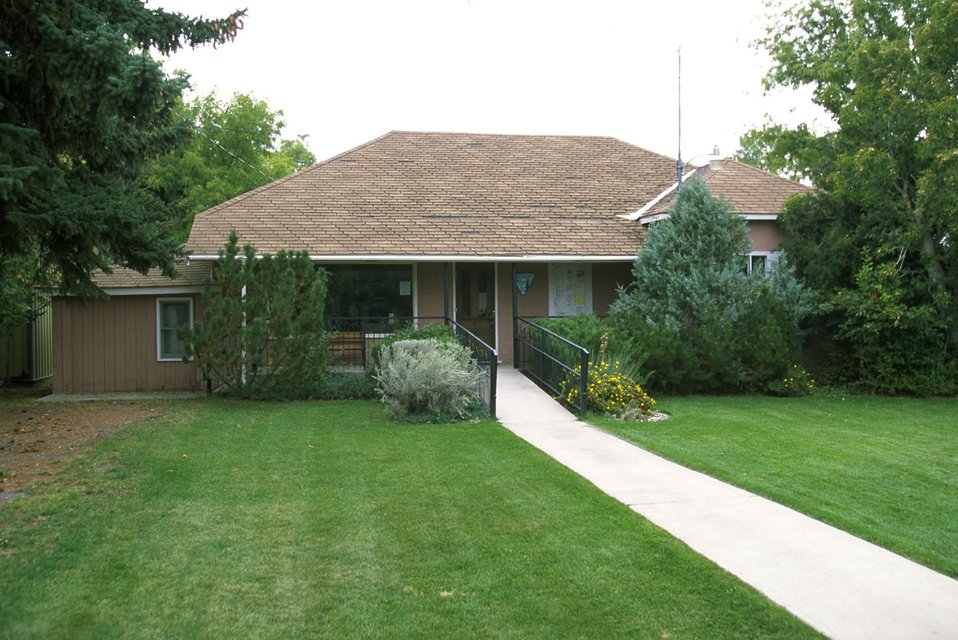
Old BLM visitor contact station in Fort Benton